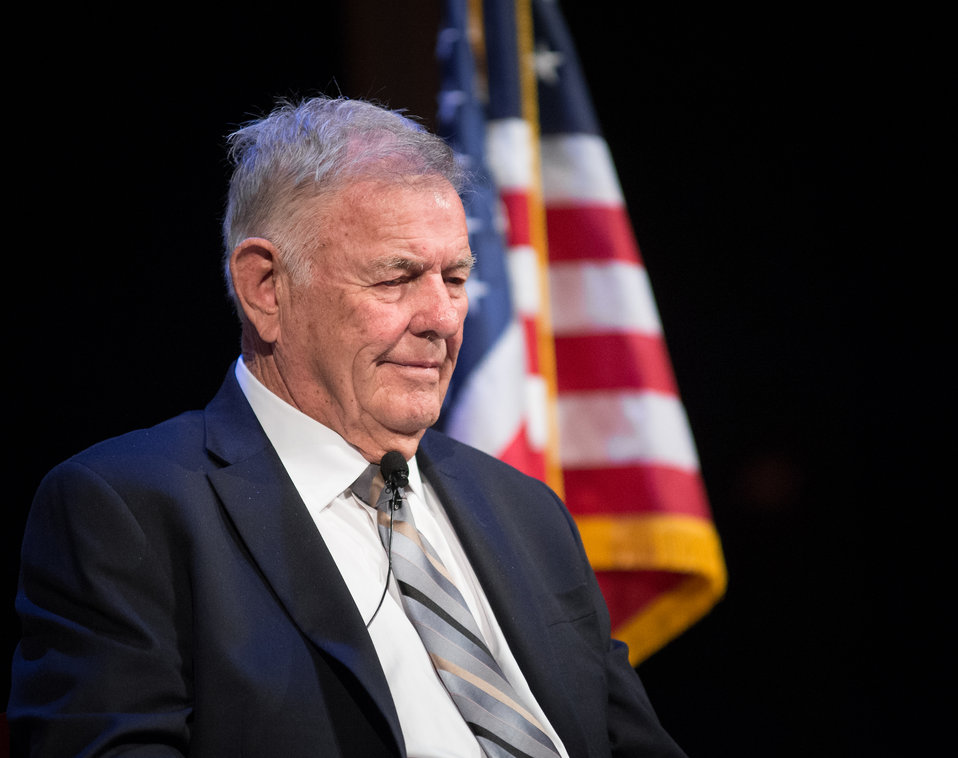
During WW2, Jimmy Gentry, was a soldier in the U.S.Army's 42nd Rainbow Division that helped liberate the Dachau Concentration Camp. Jimmy told of his experiences at the 2013 Federal Inter-Agency Holocaust Remembrance Day event, in the Lincoln Theater, in Washington, DC, on Wednesday, April 17, 2013. Mr. Jimmy Gentry told of his childhood, growing up in Tennessee during the 1930’s in contrast with his experience in the military and fighting in the Battle of the Bulge. This led to end of the war when Allied troops pushed eastward and came upon the death, starvation and illness of the 42,000 prisoners in Dachau concentration camp. Since the 1979 President’s Commission on the Holocaust, an annual proclamation signed by the President of the United States recognizes the importance of remembering the atrocities of the Holocaust that should never be forgotten or be ignored.